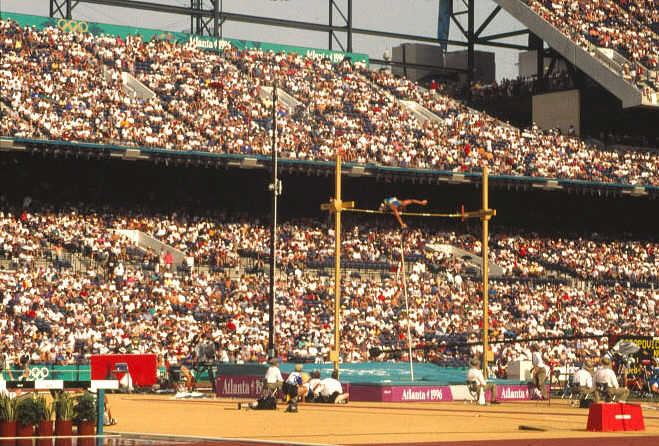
1996 Atlanta Olympics--track and field.